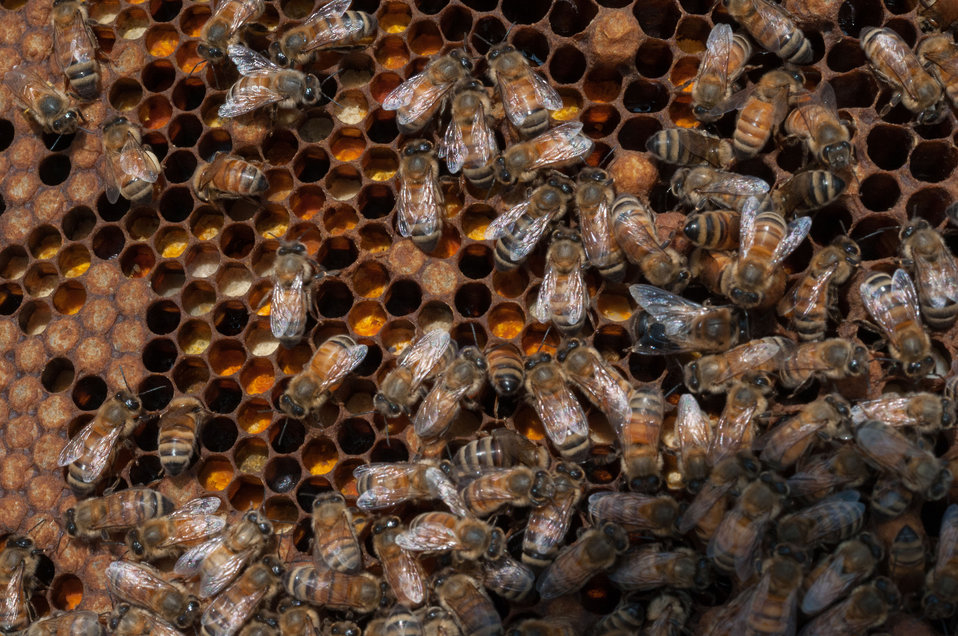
A hive of honey bees hard at work in the apiary atop the U.S.Department of Agriculture (USDA) Jamie Whitten building in Washington, D.C. on May, 22, 2013. Bees are one of nature’s many pollinators for flowers and crops and are crucial in production for fruits and vegetables. Some of the crops pollinated by bees are apples, squash, and almonds. Honeybees are responsible for pollinating approximately $15 billion worth of crops in the U. S. each year. The U. S. Department of Agriculture (USDA) Agricultural Research Service (ARS) and Natural Resource Conservation Service (NRCS) are working on ways to mitigate the decline of the bee population by coordinating pollination research, conservation, and education among USDA agencies and their partners.